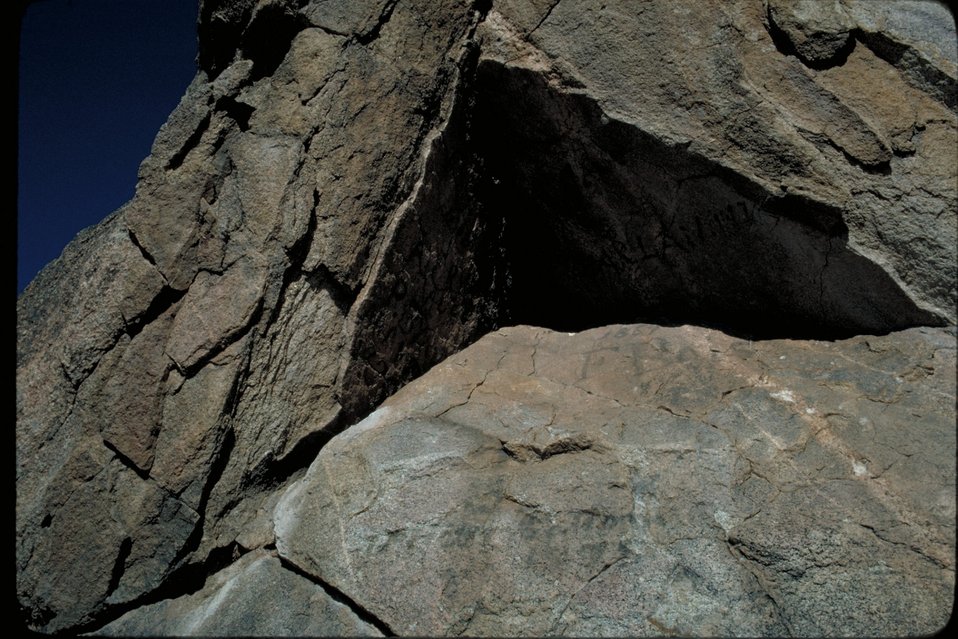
Oregon Trail Inscription near Ditto Creek Lower Snake River District